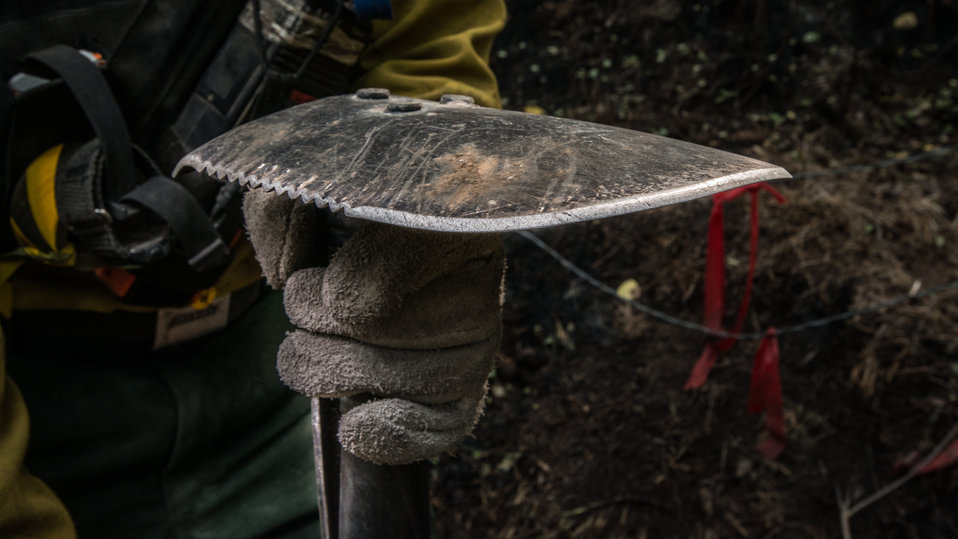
John Alexander Roebuck, Choctaw, Incident Commander Type 5, uses a complex application of tape on his Combi-tool to identify his from someone else's hand tool. The tool is part right-angle shovel and part pick that quickly loosens and drags fire fuels such as fallen wood debris to one side in the formation of a shallow trench line that will help break a fire's progression, during Beaver Creek Fire operations, near Hailey, ID, in the interface of U.S. Department of Agriculture (USDA) Forest Service (FS) and Sawtooth National Forest and Bureau of Land Management (BLM) lands, on Wednesday, Aug 21, 2013.